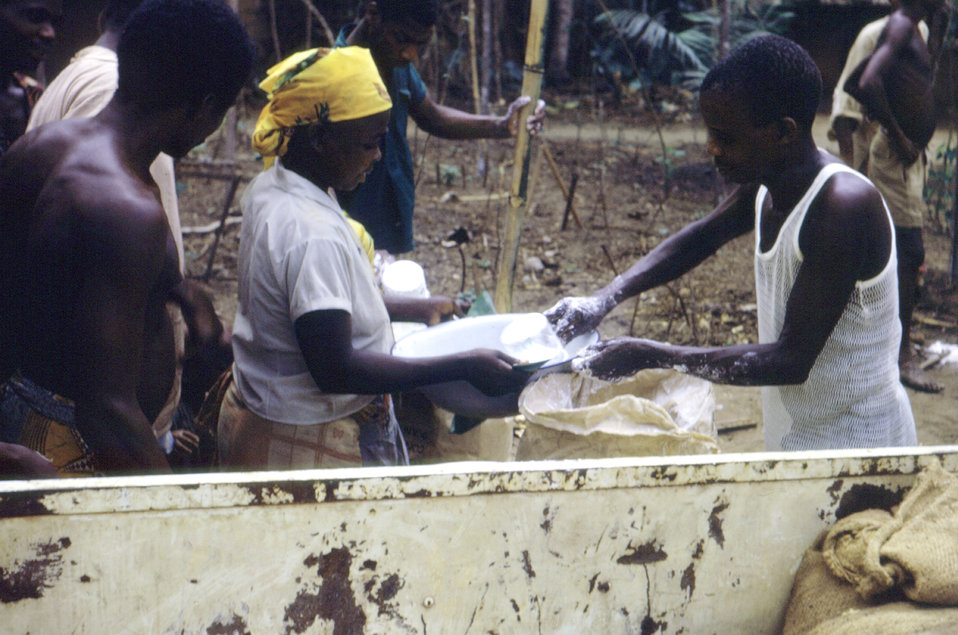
This 1968 photograph shows the distribution of dry food rations to a Nigerian woman from within a southeastern relief camp during the Nigerian-Biafran civil war.